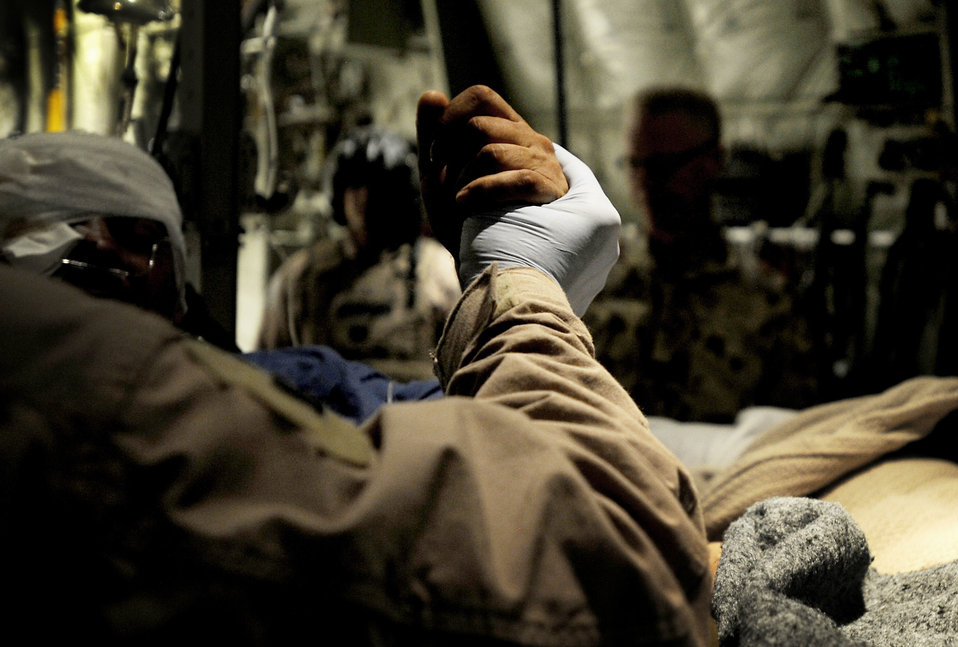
Flying hospital staff gives wounded fighting chance

An Airman from the 451st Expeditionary Aeromedical Evacuation Flight holds the hand of a patient during an aeromedical evacuation mission to transport patients July 19 from Kandahar Airfield, Afghanistan, to Bagram Airfield, Afghanistan.